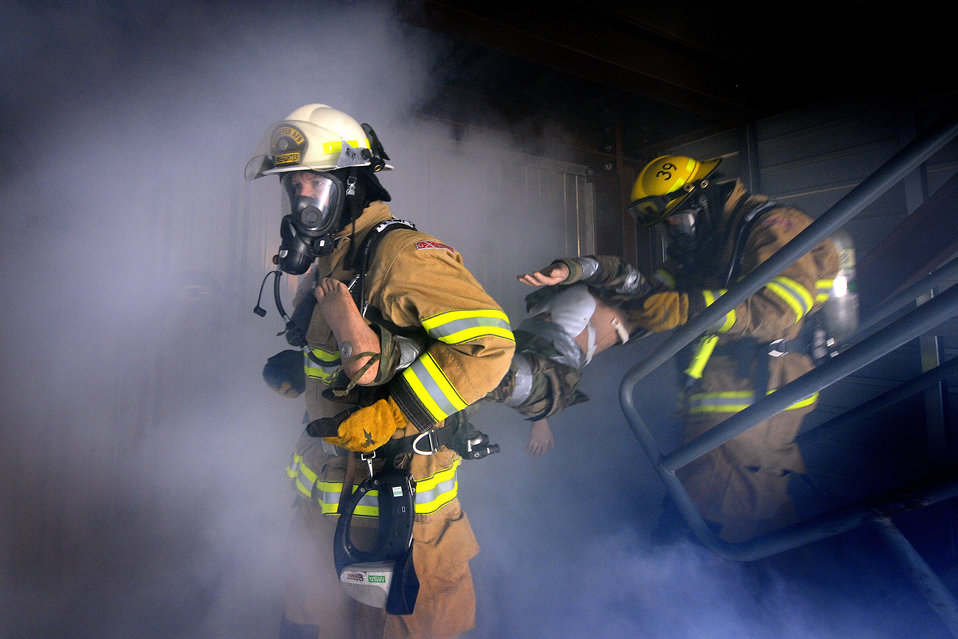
Commanding rescue

Col. Wayne Monteith, commander of the 50th Space Wing, and firefighter Cody Marion join together to rescue a 'victim' from a smoke-filled room Dec. 3, 2010, in the fire suppression training facility at Schriever Air Force Base, Colo. The commander participated in the training to get firsthand experience.